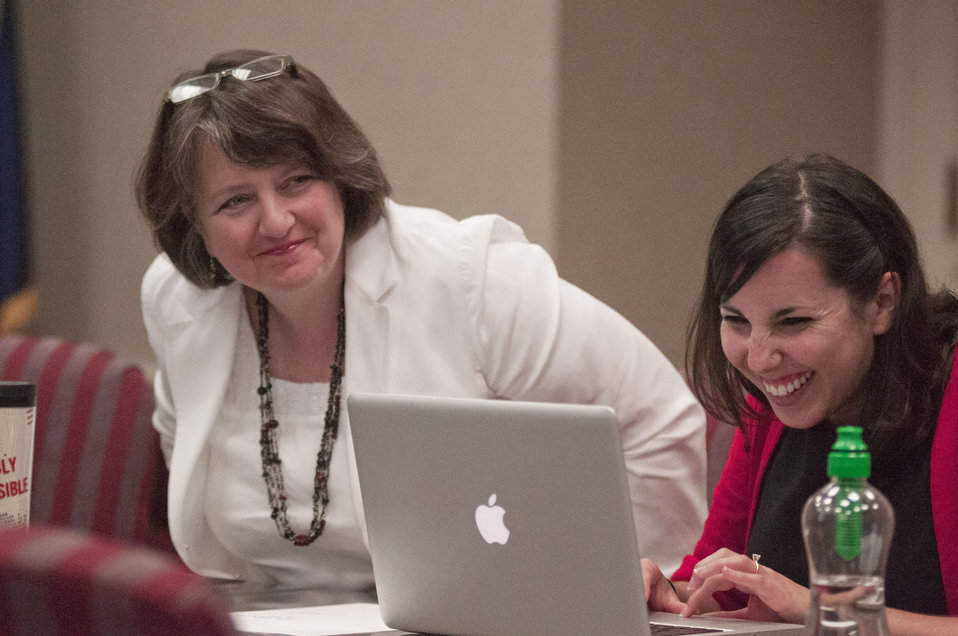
Agriculture Deputy Secretary Kathleen Merrigan (left) , joins New Media Content Specialist Rebecca Frank to host a live Twitter chat focused on the Department’s support of local and regional food systems and the recent release of the 2.0 version of the Know Your Farmer, Know Your Food Compass on Tuesday, July 24, 2012, in Washington, D.C. Deputy utilized her staff and other subject matter experts to provide useful answers to questions from the public during the #ASKUSDA Virtual Office Hours on Local Food.